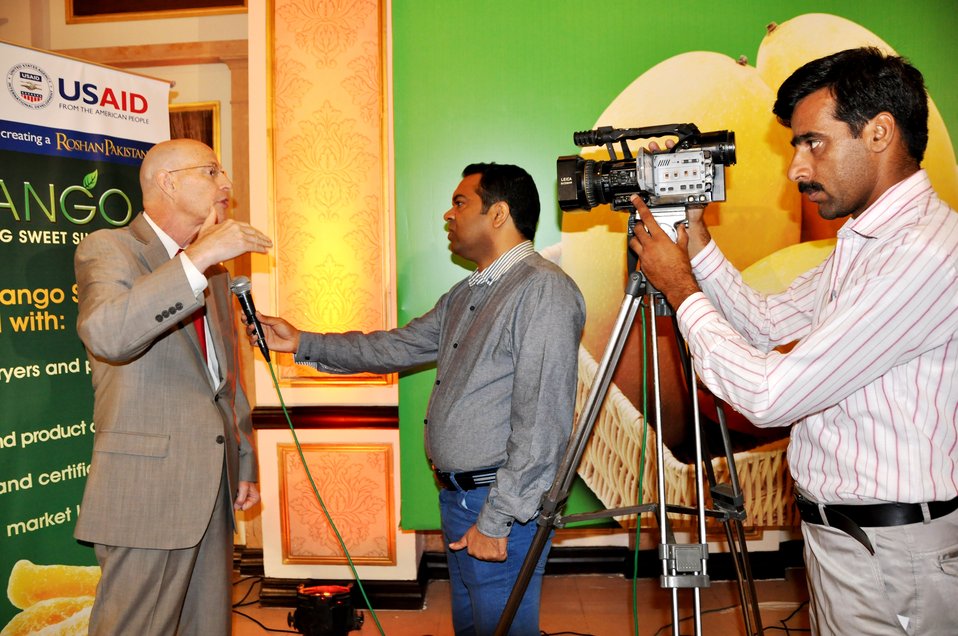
Mango Conference

USAID's Mission Director, Greg Gottlieb